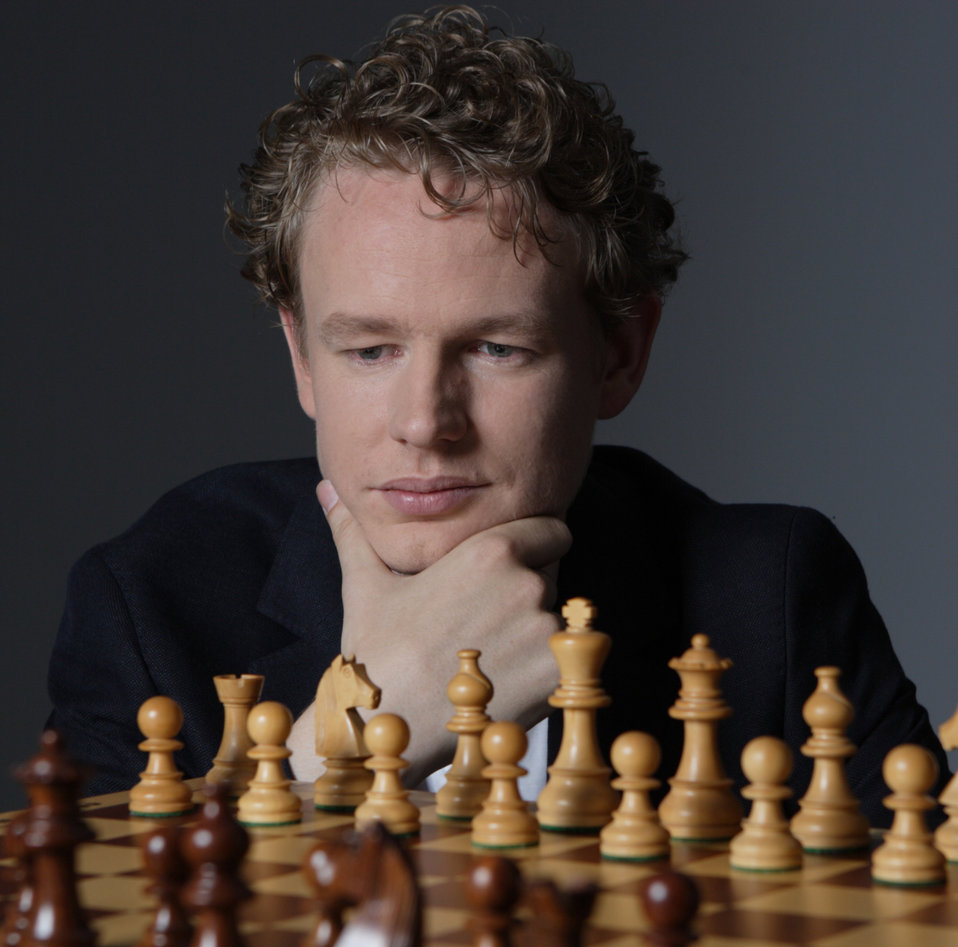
Deutsch: de:Jan Gustafsson 2010